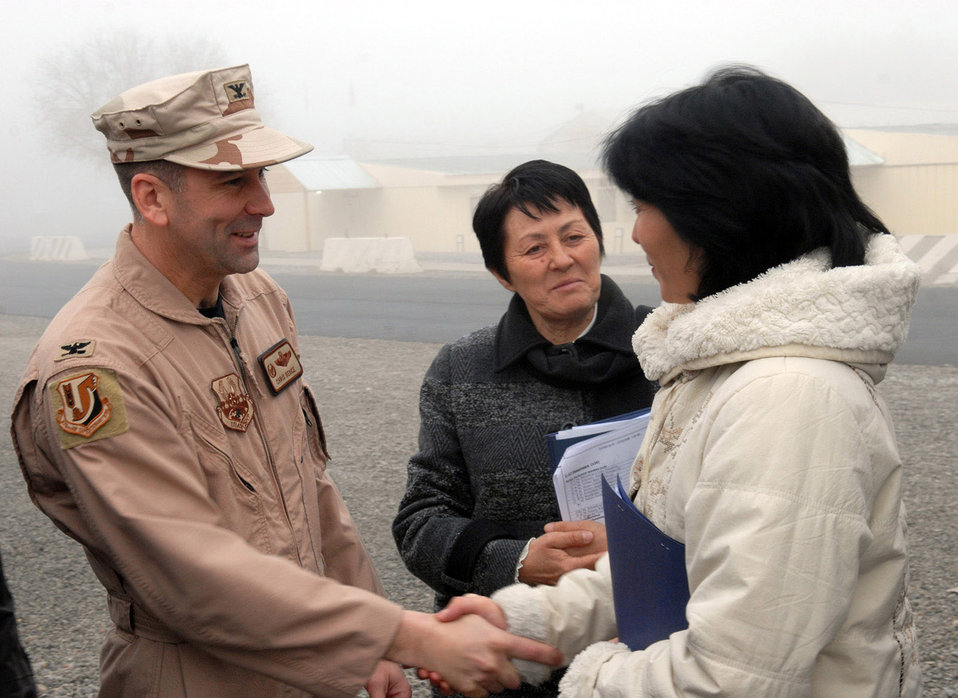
Kyrgyzstan parliament members visit Manas

Col. Christopher Bence welcomes a member of the Kyrgyz parliament to a mission briefing during a Dec. 15 visit to Manas Air Base, Kyrgyzstan. Colonel Bence is the 376th Air Expeditionary Wing commander.